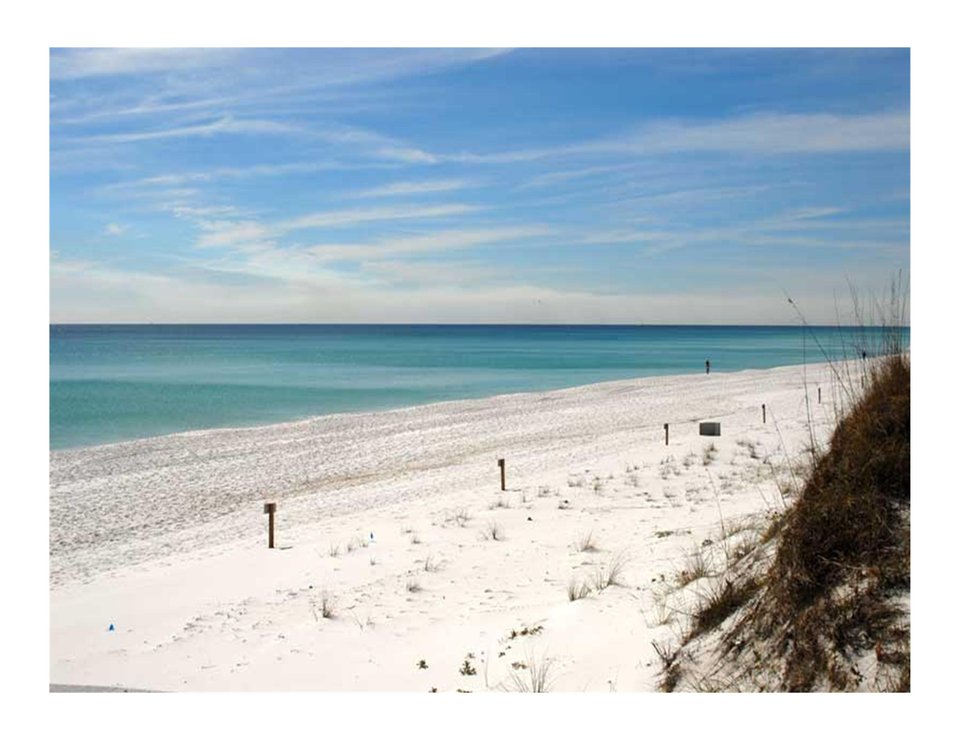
Welcoming beach, Louisiana